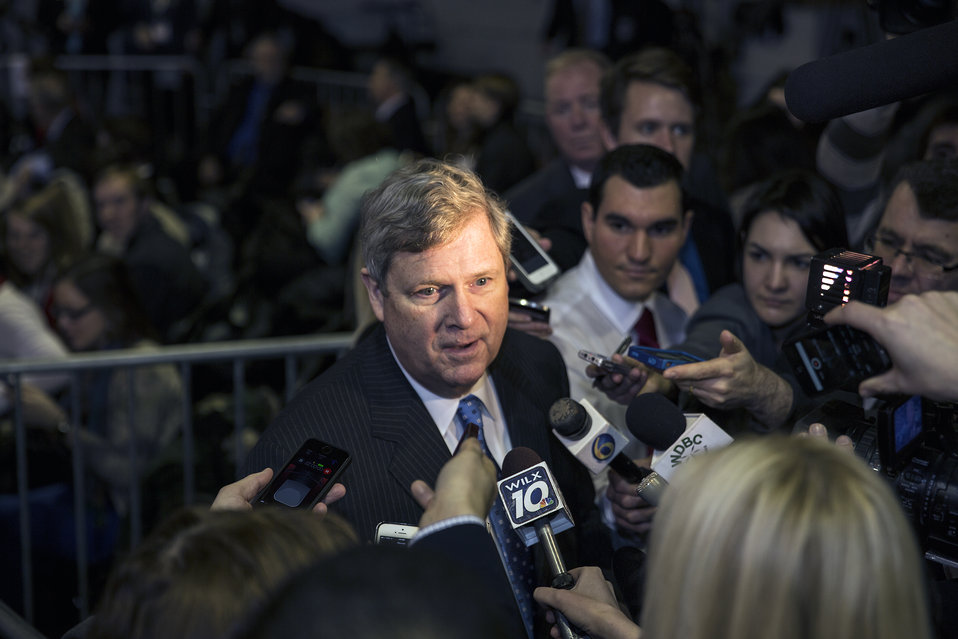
Agriculture Secretary Tom Vilsack speaking with members of the press after President Barack Obama signed the 2014 Farm Bill at Michigan State University, Lansing Michigan, on Friday, Feb. 7, 2014.